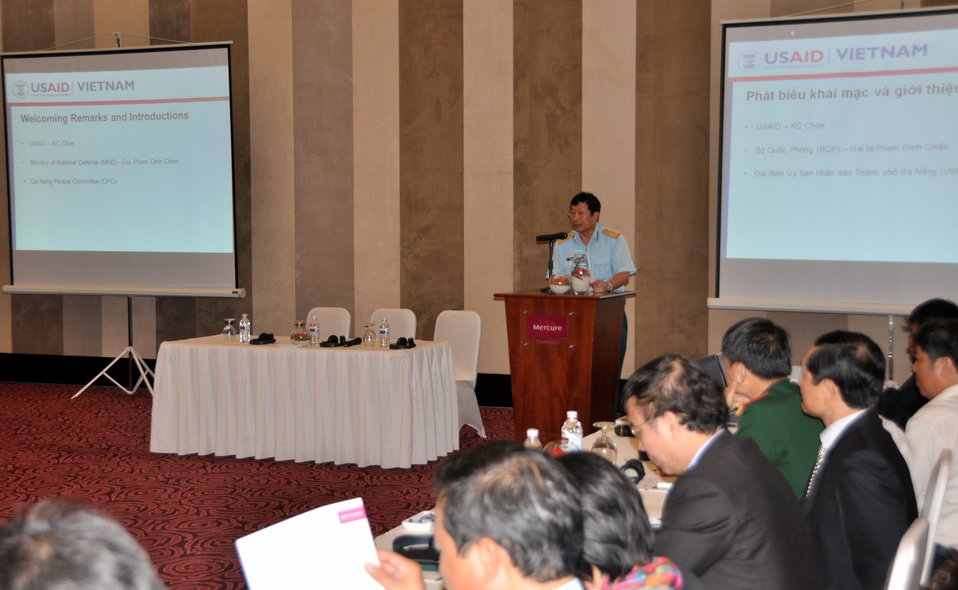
Danang Stakeholder Meeting

Environmental Remediation of Dioxin Contamination at Danang Airport

Danang, Vietnam
January 23, 2013
Photos @USAIDVietnam